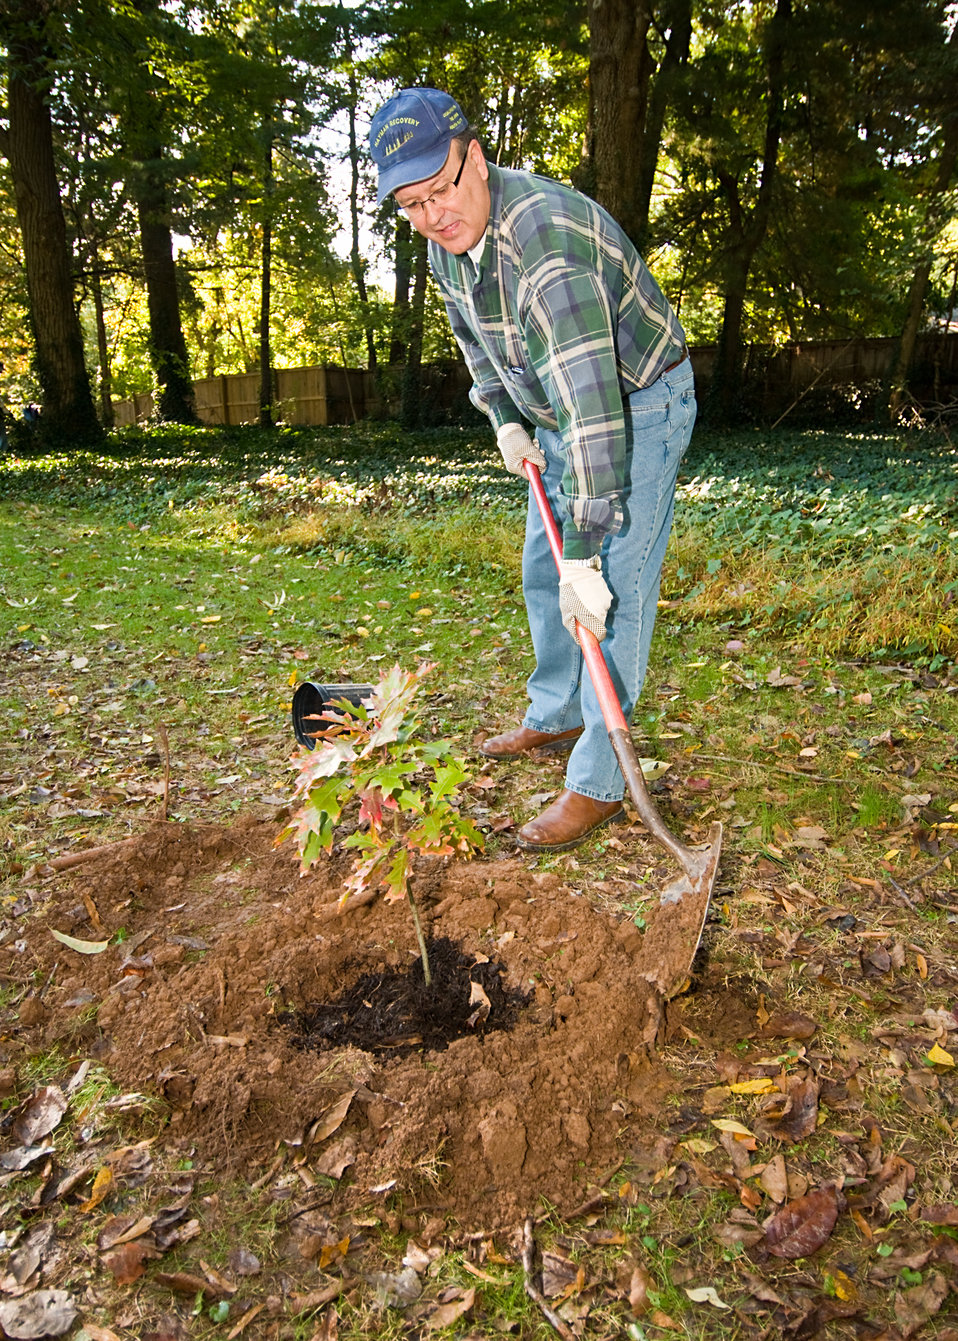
Felix Spinelli, Senior Economist, Natural Resources Conservation Service puts the finishing touches on a White Oak seedling propagated from one of the original Oaks at “Eight Oaks” the home of Dr. Hugh Hammond Bennett the first Chief of the Natural Resources Conservation Service then the Soil Erosion Service at Dr. Bennett’s home in McLean, Virginia on Friday, October 15, 2010 as part of the celebration for the 75th Anniversary of the Natural Resources Conservation Service. Spinelli and employees of the Natural Resources Conservation Service planted eight white, willow and scarlet oak seedlings, three of which were progenies of the eight original oaks on the property. USDA Photo 10di1523-18 by Bob Nichols.